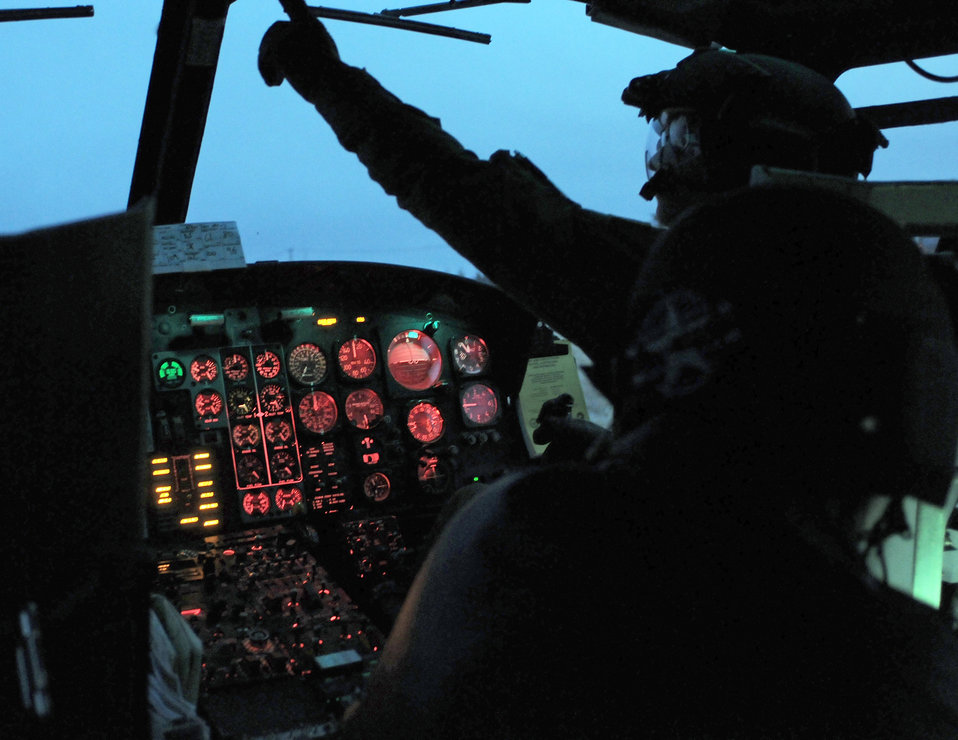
Refueling at Kasuminome

Capt. Matthew Sims, 459th Airlift Squadron UH-1N Iroquois pilot, prepares to head back to Yokota Air Base after refueling at Kasuminome Airfield March 13. UH-1N helicopters at Yokota Air Base normally provide base leadership fast and efficient means of transit to meetings and events in downtown Tokyo, but are currently being used to shuttle disaster relief personnel to locations along Japan?s East Coast.